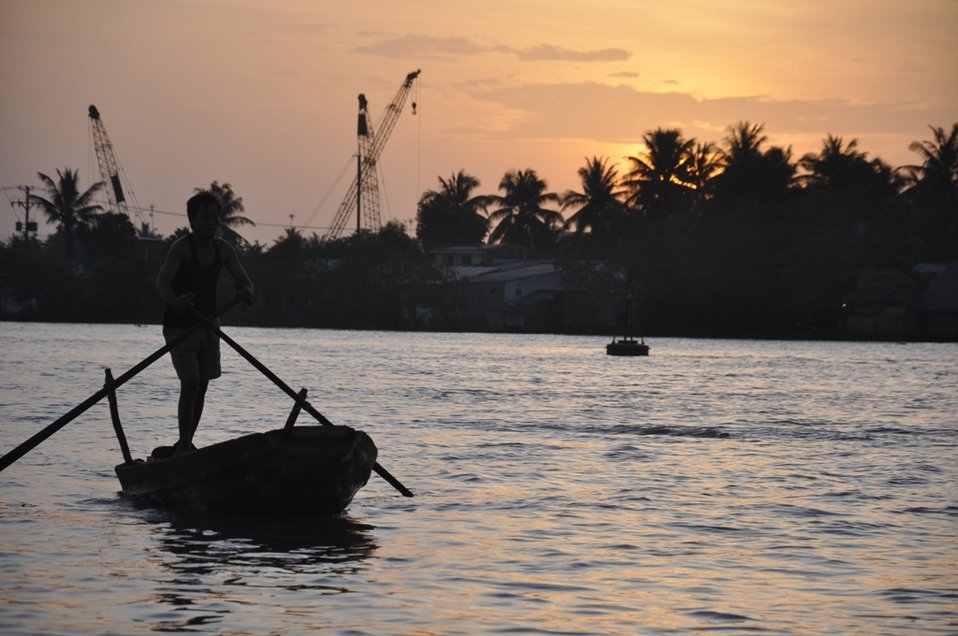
Can Tho floating market

Early morning in Can Tho, Vietnam